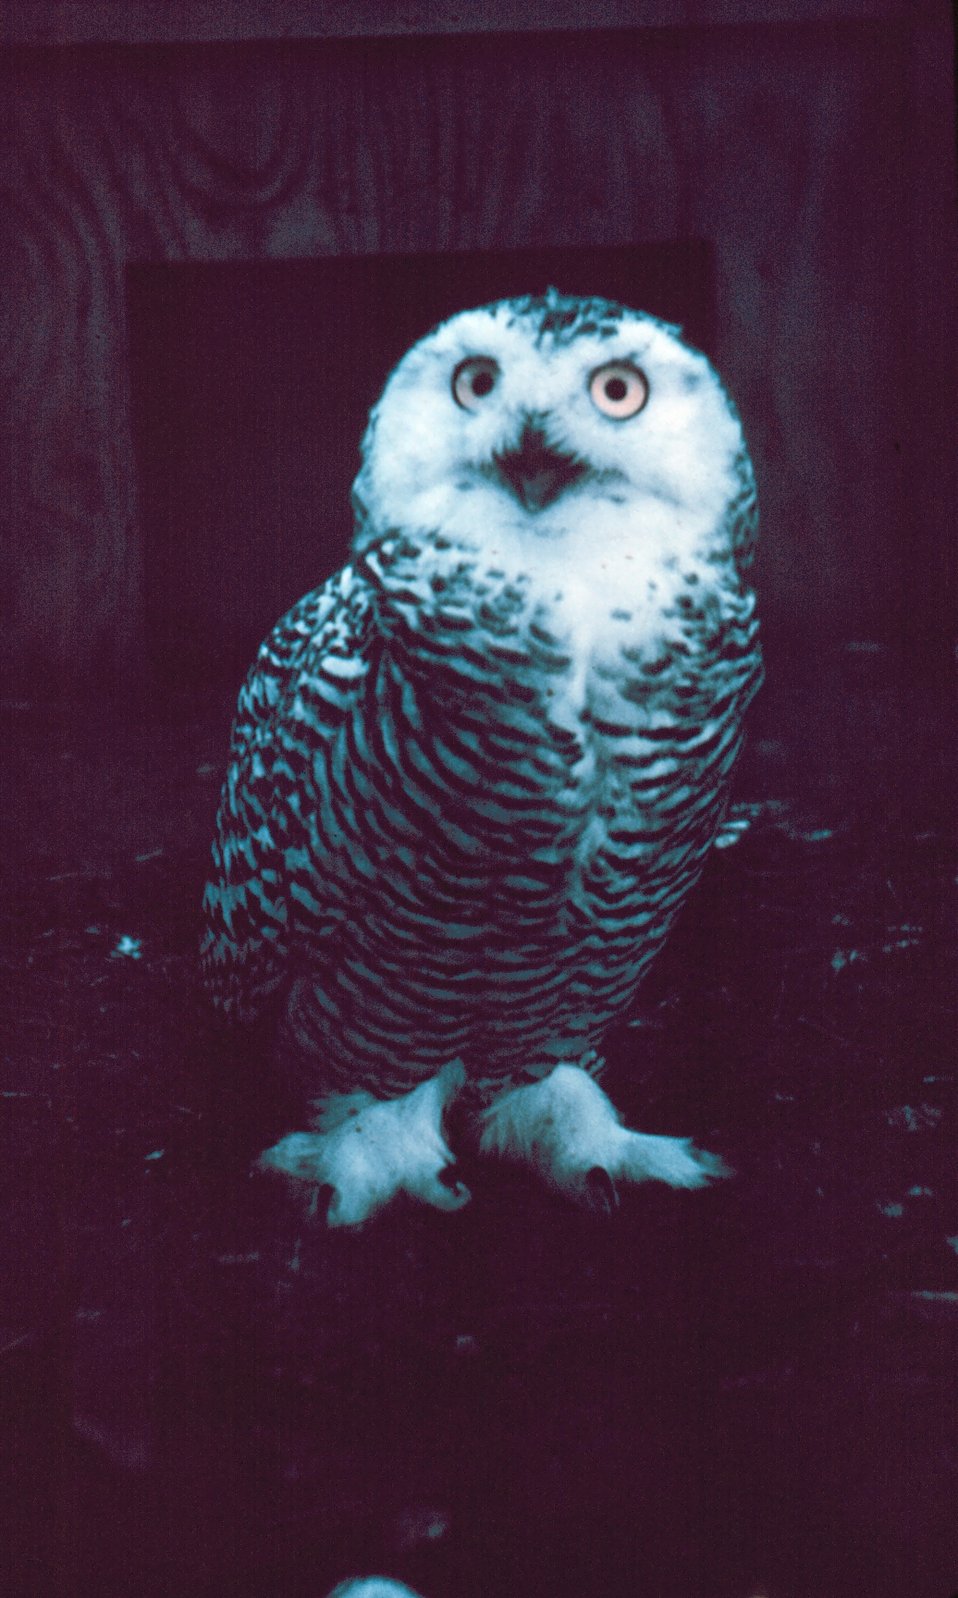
Snow owl.